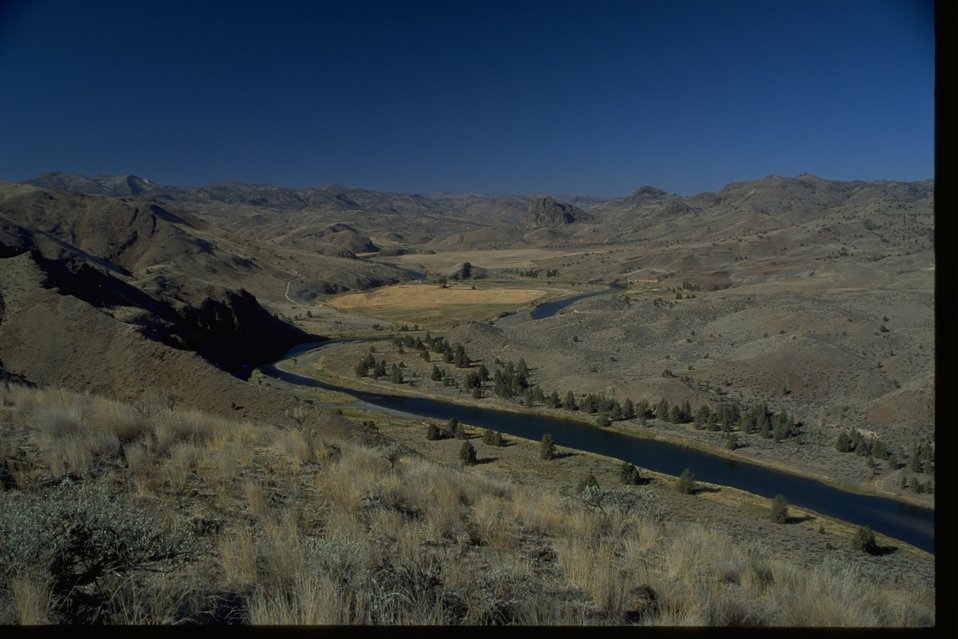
Bridge Creek agricultural fields from ridge.